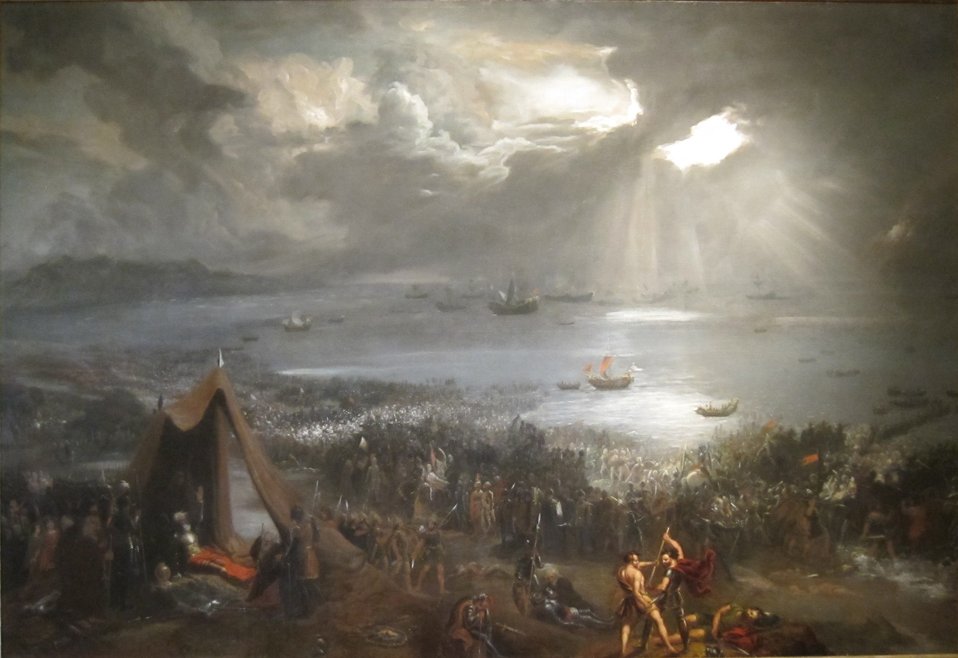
Battle of Clontarf, oil on canvas painting by Hugh Frazer, 1826, Isaacs Art Center